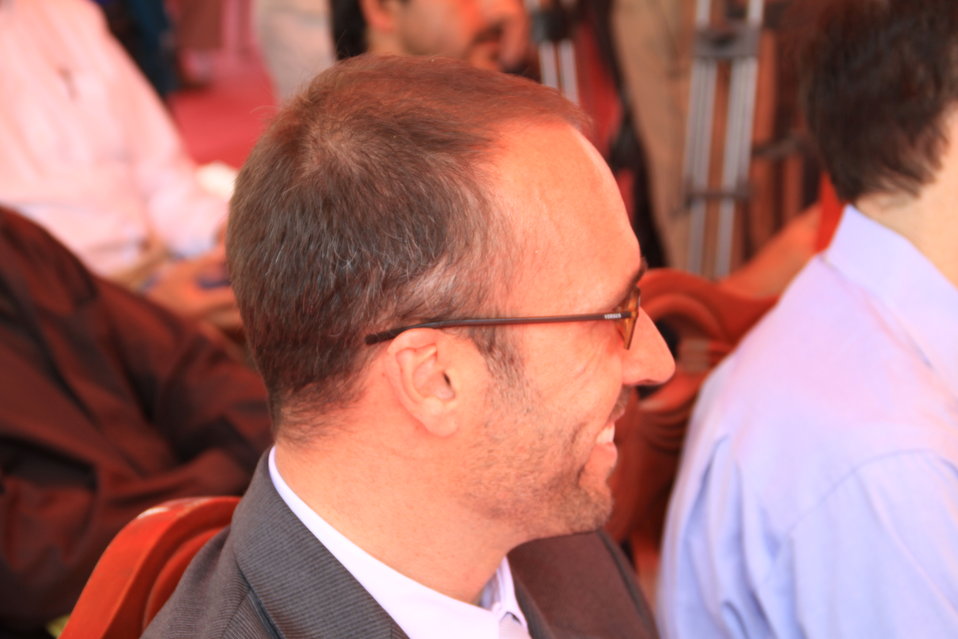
Badam Bagh Farm